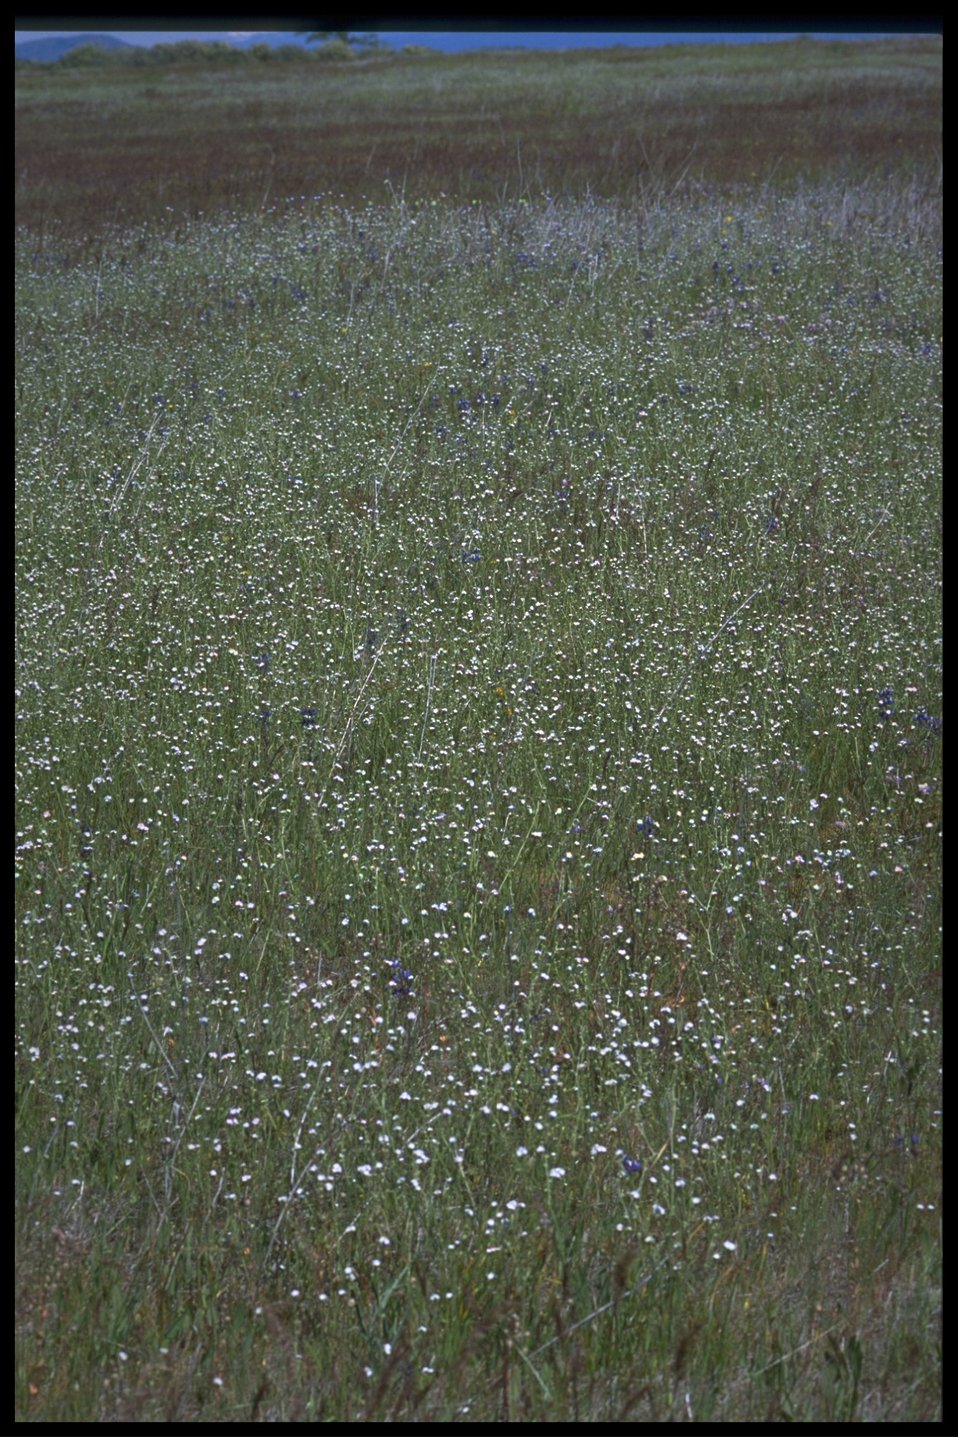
Farshot of Lupinus bicolor, Plagiobothrys fulvus.